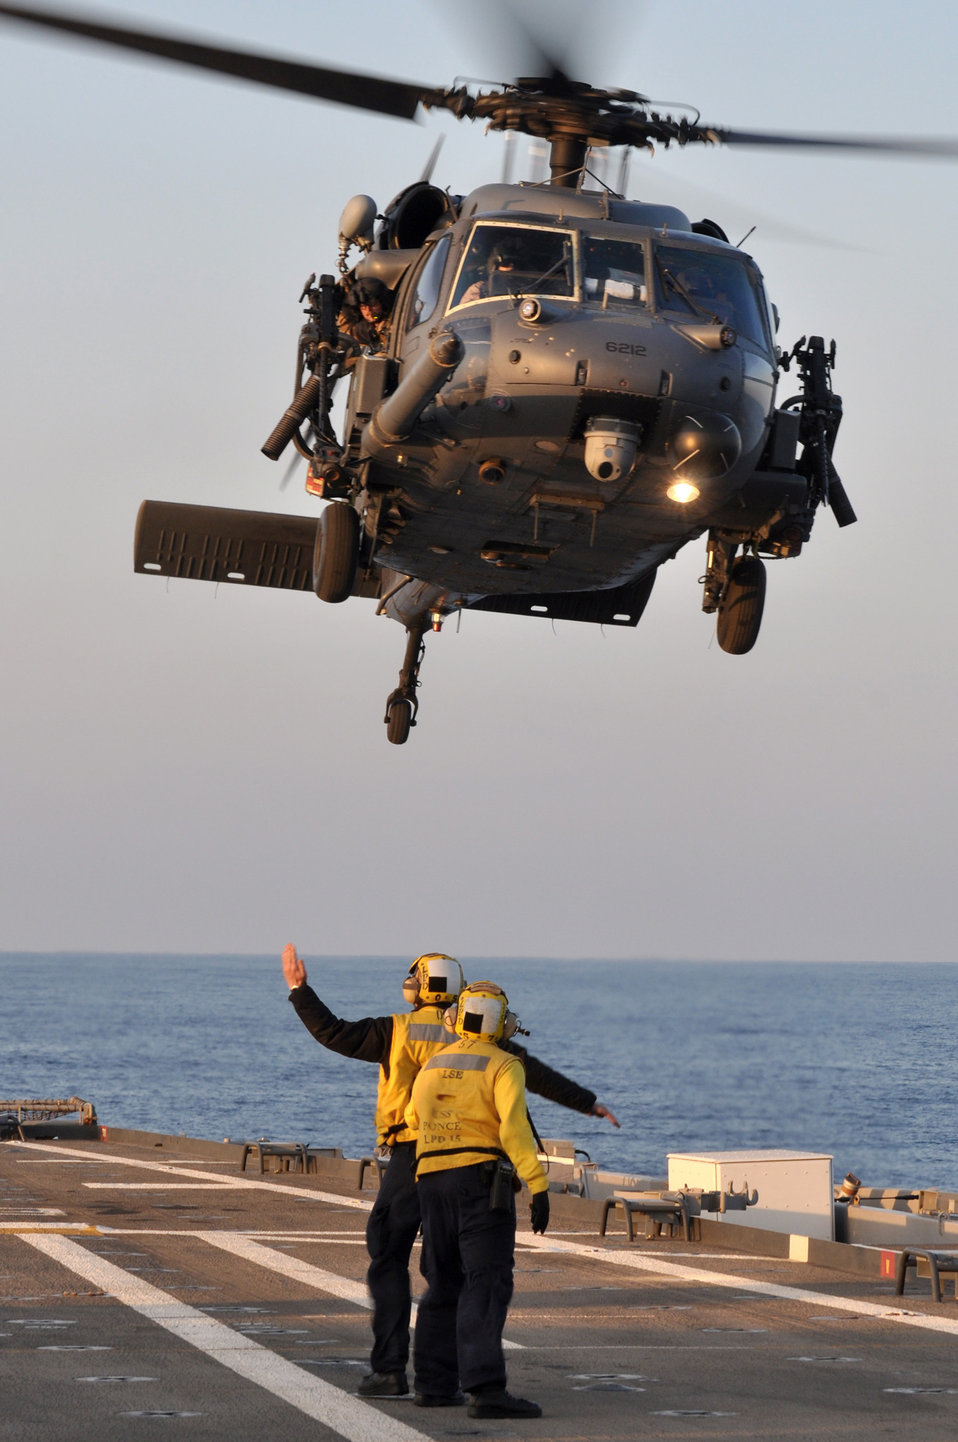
56th Rescue Squadron Flight Ops

110325-N-7293M-330 MEDITERRANEAN SEA (Mar. 25, 2011) Aviation Boatswain?s Mate (Handler) 2nd Class Matthew Kolb supports Aviation Boatswain?s Mate (Handler) Airman John Billington against the powerful down draft of the rotors as Billington directs a U.S. Air Force HH-60G Pave Hawk from the 56th Rescue Squadron while it takes off from amphibious transport dock USS Ponce (LPD 15) during evening training operations. Elements of the 56th Rescue Squadron, which is based out of RAF Lakenheath, England, embarked aboard Ponce to provide search and rescue coverage for pilots enforcing the no-fly zone over Libya. Ponce is part of Kearsarge Amphibious Ready Group, supporting maritime security operations and theater security cooperation efforts in the U.S. 6th Fleet area of responsibility.